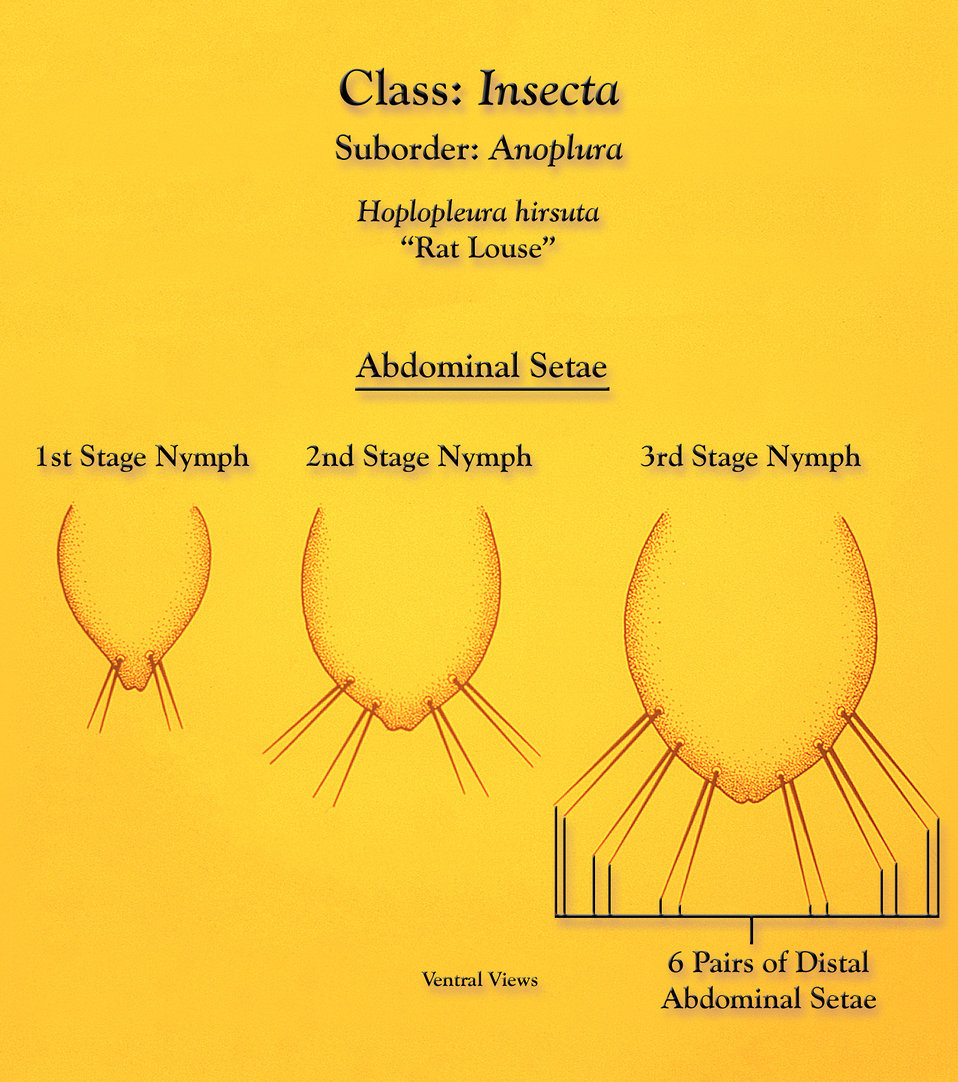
This illustration depicts the morphologic characteristics found to be displayed by the Anopleural sucking 'rat louse', Hoplopleura hirsuta during its first, second, and third nymphal stages.